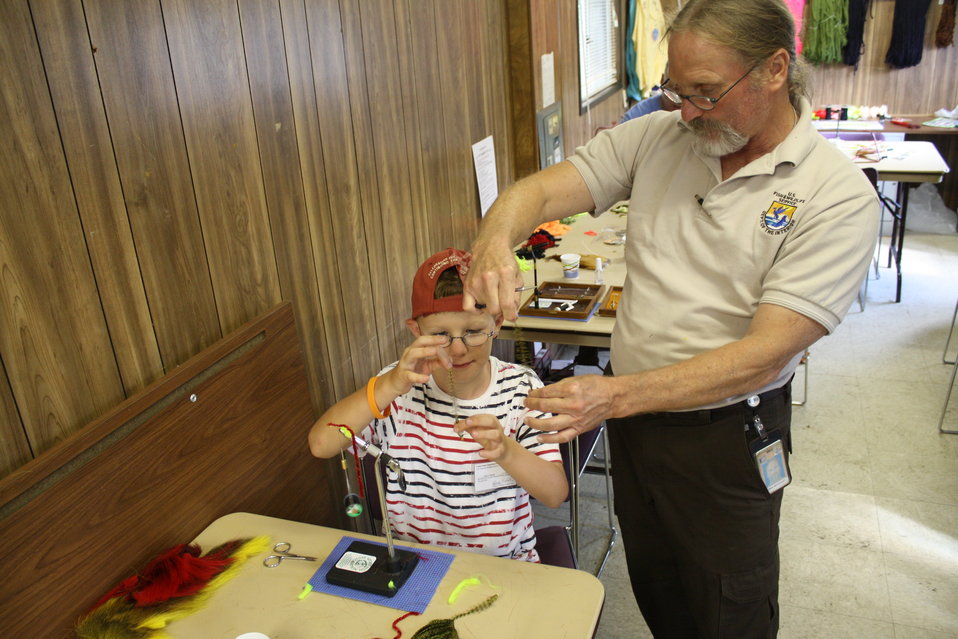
Boy Scout Jamboree 2010